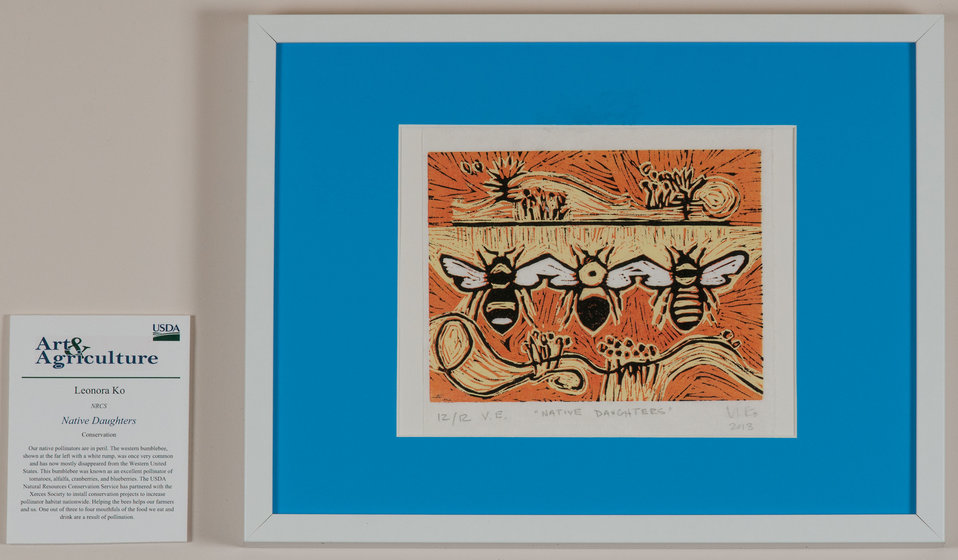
Online Viewer's Choice entries of the 2013 Art & Agriculture, Tuesday, July 9, 2013, in the South Building, Washington, D.C. Themes were expressed by employees from across the department and the contest was open to full-time and part-time USDA employees. Winning artwork will be displayed till the end of the year. U.S. Artistic expression is a creative outlet that is vital for an individual to grow and develop.